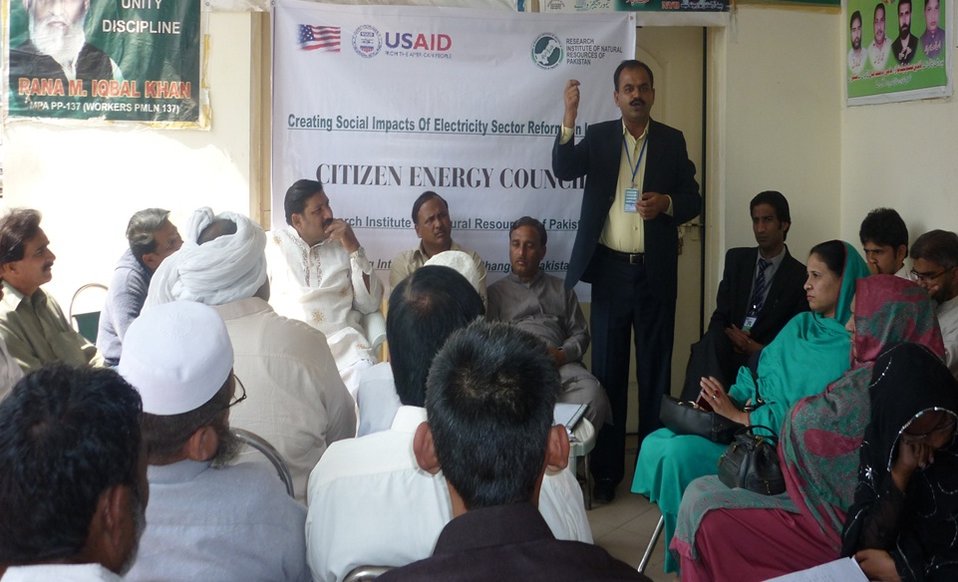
Caption 19 - RINP - Lahore Punjab - Citizens Energy Council Meeting 1

Research Institute of Natural Resources of Pakistan (RINP) is working in Lahore for energy sector reforms under the Citizens’ Voice Project. Like other partner organizations, their work is also advocacy based and aimed at increasing citizens’ engagement with the state institutions. RINP created democratically elected bodies of citizens called Citizens’ Energy Councils (CECs) in Lahore, Punjab, which are interacting with Lahore Electric Supply Corporation (LESCO) for securing better services in the energy sector for the people. Here is a view of a meeting of the Citizens’ Energy Council in Lahore to discuss key issues in the energy sector.